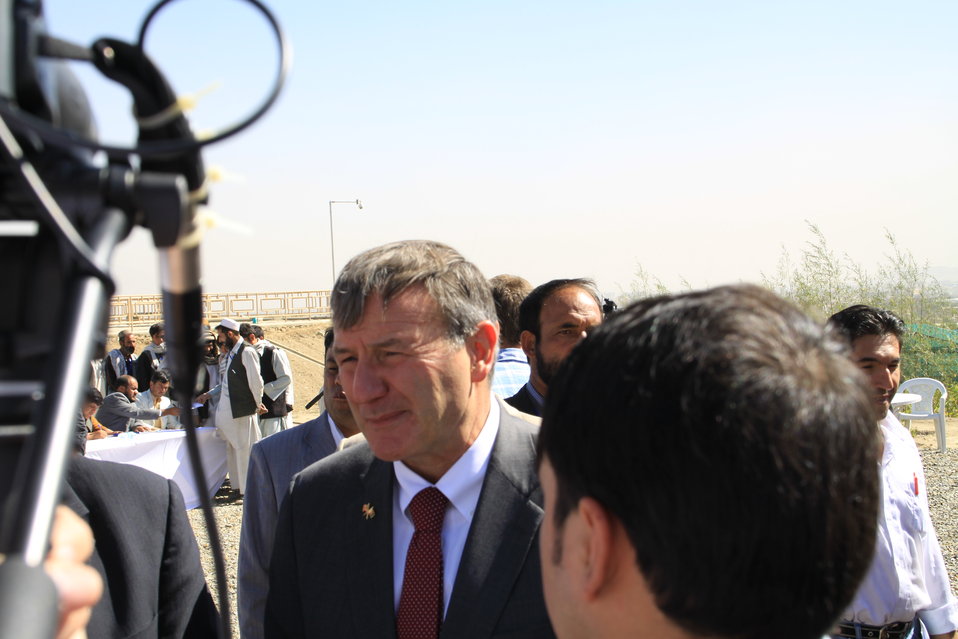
AVIPA Plus Wheat Seed Distribution 101005

US Ambassador Karl Eikenberry and USAID Acting Mission Director Kevin Brownawell joined the Minister of Agriculture, Irrigation and Livestock, H.E. Minister Mohammed Rahimi in signing a Memorandum of Understanding and distributing vouchers to area farmers for wheat and fertilizer.

US Ambassador Karl Eikenberry and USAID Acting Mission Director Kevin Brownawell joined the Minister of Agriculture, Irrigation and Livestock, H.E. Minister Mohammed Rahimi in signing a Memorandum of Understanding and distributing vouchers to area farmers for wheat and fertilizer.

US Ambassador Karl Eikenberry and USAID Acting Mission Director Kevin Brownawell joined the Minister of Agriculture, Irrigation and Livestock, H.E. Minister Mohammed Rahimi in signing a Memorandum of Understanding and distributing vouchers to area farmers for wheat and fertilizer.